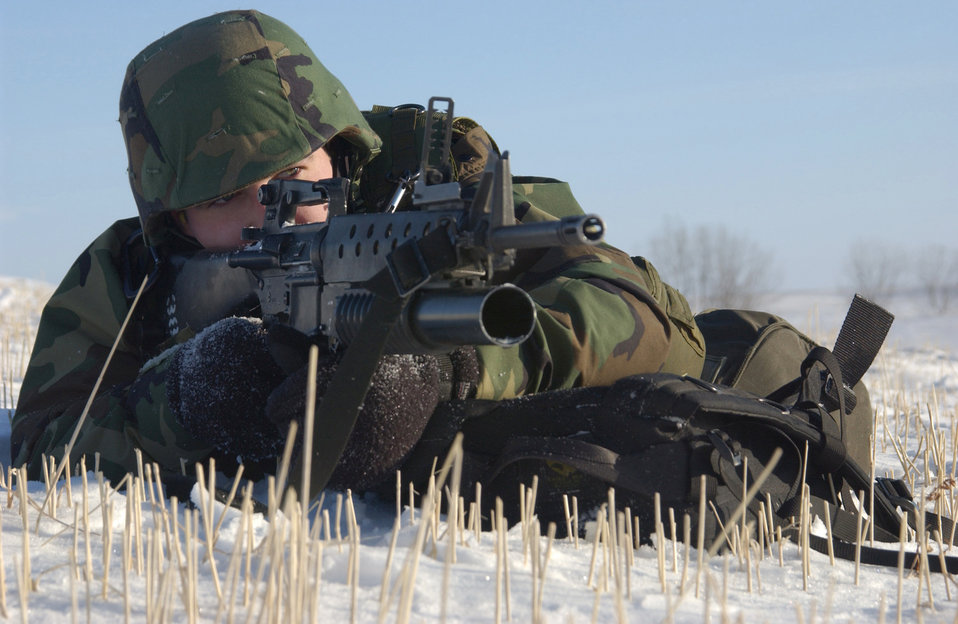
Cold-weather capture

MINOT AIR FORCE BASE, N.D. (AFPN) -- Airman 1st Class Danny J. Nash is in position during a recapture exercise Jan. 14 at a missile launch facility near here. The exercise tested the base's ability to handle intruders at the launch facility. Airman Nash is assigned to the 91st Missile Security Forces Squadron.